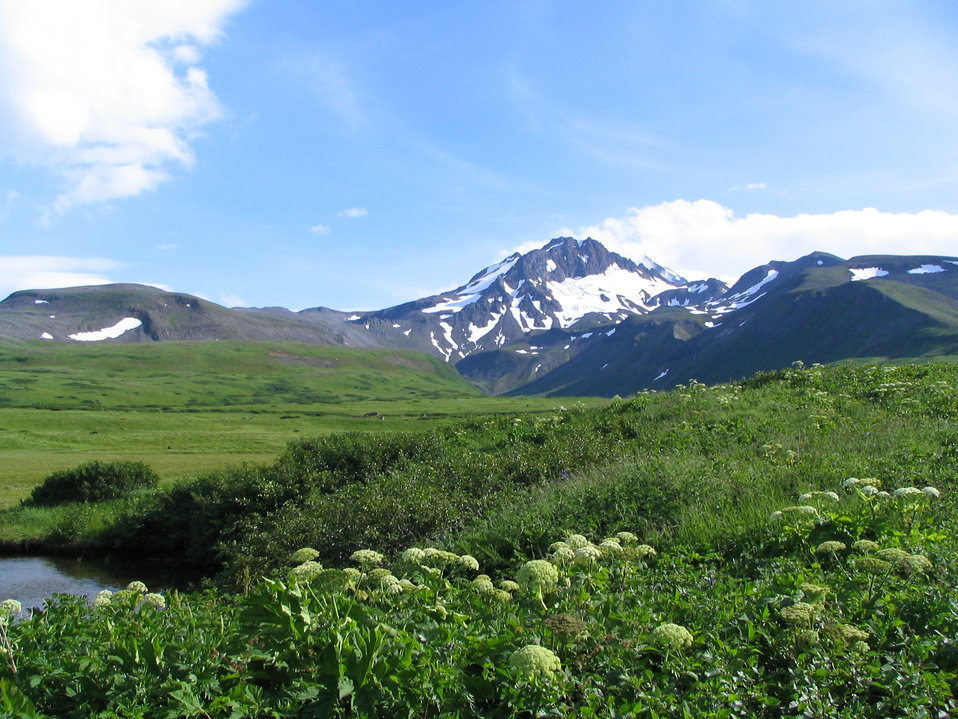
Frosty Peak

Izembek National Wildlife Refuge